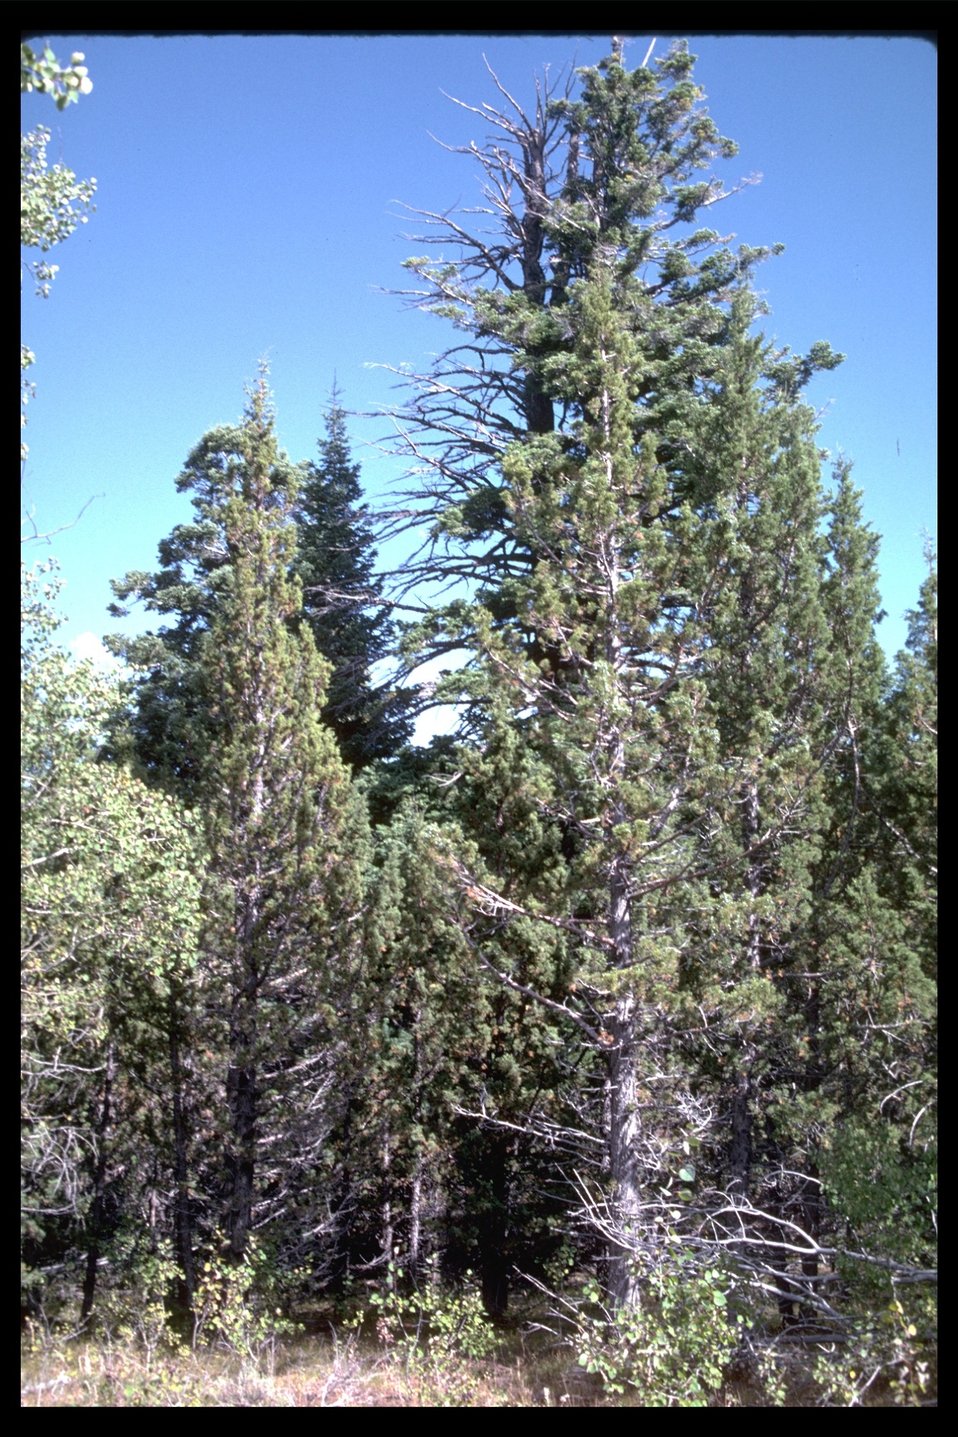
Large Fir trees on Fence Creek.